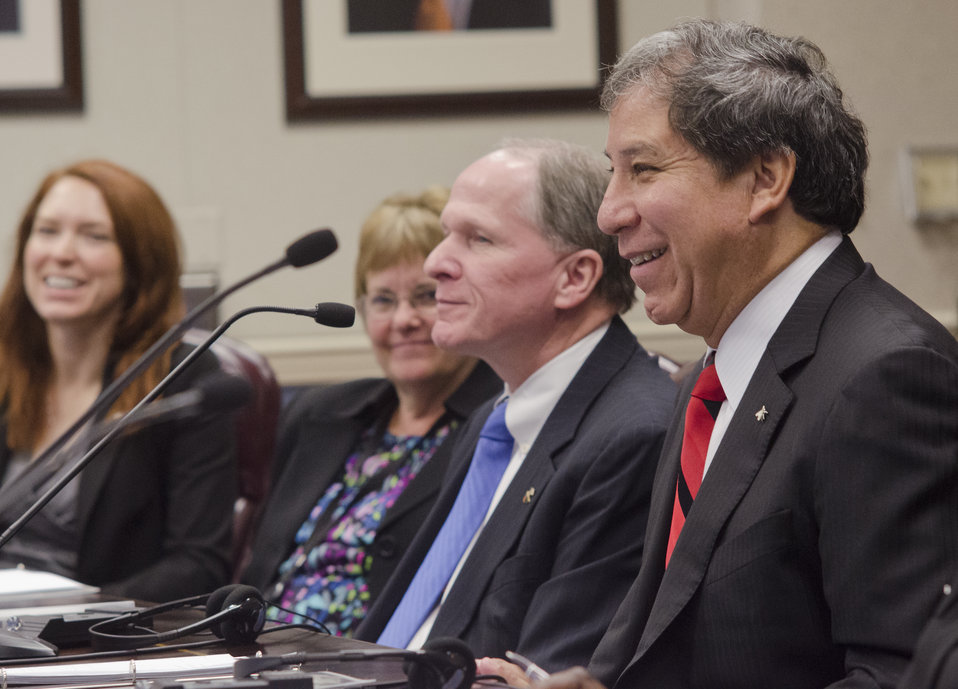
Agriculture Under Secretary Marketing and Regulatory Programs (MRP) Ed Avalos smiles at the U.S. Department of Agriculture’s (USDA) 73rd and Final Commissioners’ Meeting of the U.S. – Mexico Cooperative Screwworm Program in the Williamsburg room at USDA in Washington, D.C. on Oct. 5, 2012.